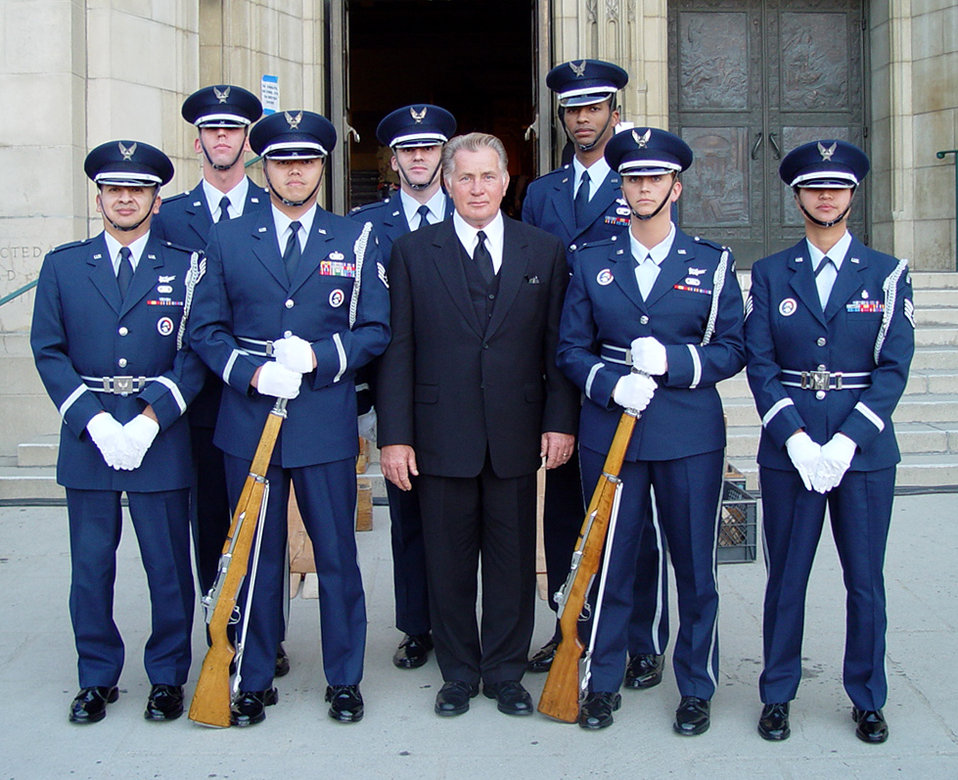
Honor guard goes Hollywood

LOS ANGELES (AFPN) -- Members from the Los Angeles Air Force Base Honor Guard pose for a picture Feb. 9 with actor Martin Sheen during a break from filming an episode of NBC's